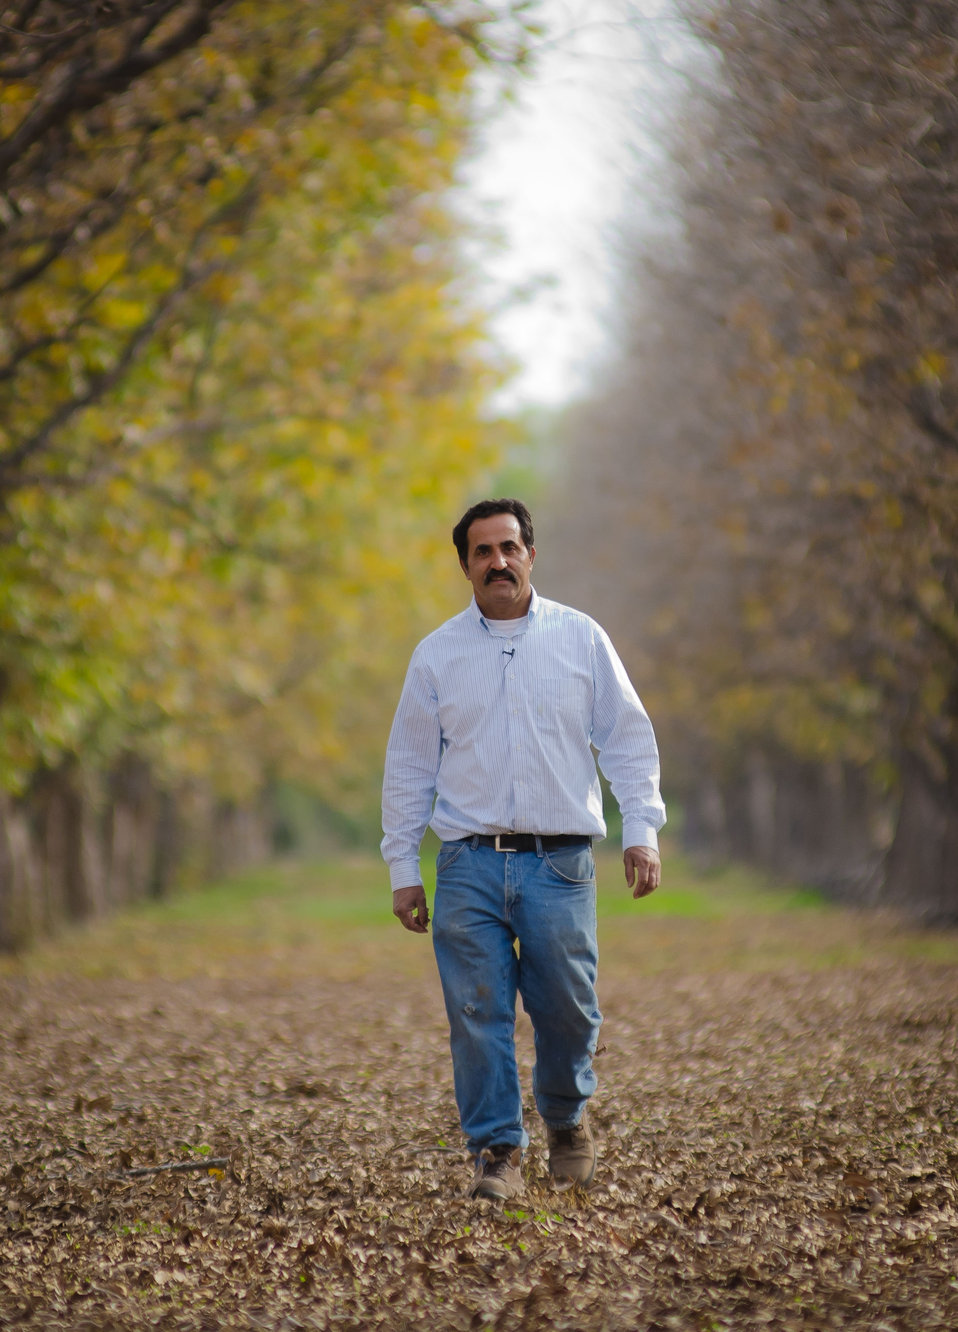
Arrowhead Farms of Crystal City, TX, on December 9, 2011, survived the exceptional drought and owner Mr. Akram Mohammad, can walk through the rows of 4,380 underground micro irrigated pecan trees on 146 of his 719 acre farm. Under his feet are nearly 25,000 feet of drip tubes, cutting in half the demand for water. During the growing season, the micro irrigated orchards are nearly a one-person operation. Mr. Mohammad said, “USDA (U.S. Department of Agriculture) was essential to my business and trees surviving the recent exceptional drought. The trees were stress free thanks to underground micro-irrigation. This is essential to the future growth of Texas agriculture and good for America.” U.S. Department of Agriculture’s (USDA) Environmental Quality Initiative Program (EQIP) awarded Mr. Mohammad a $130,000 grant in 2008. He provided $26,000 for the balance of the $156,000 total cost to install a 146-acre underground micro-irrigation for 4,380 trees.